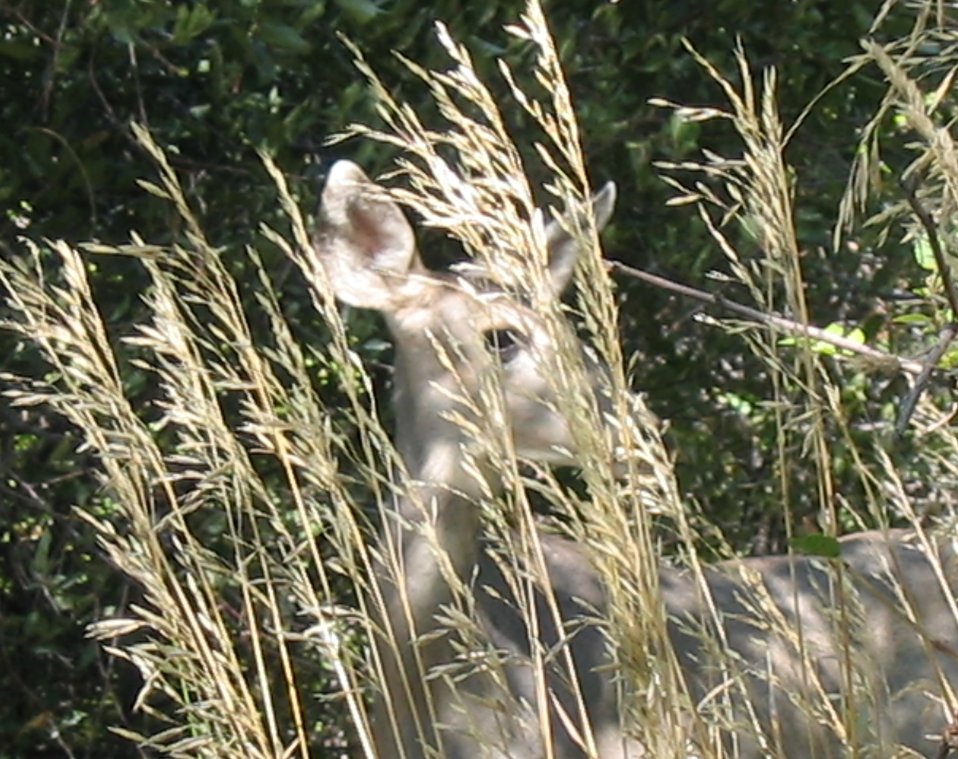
Deer Brush